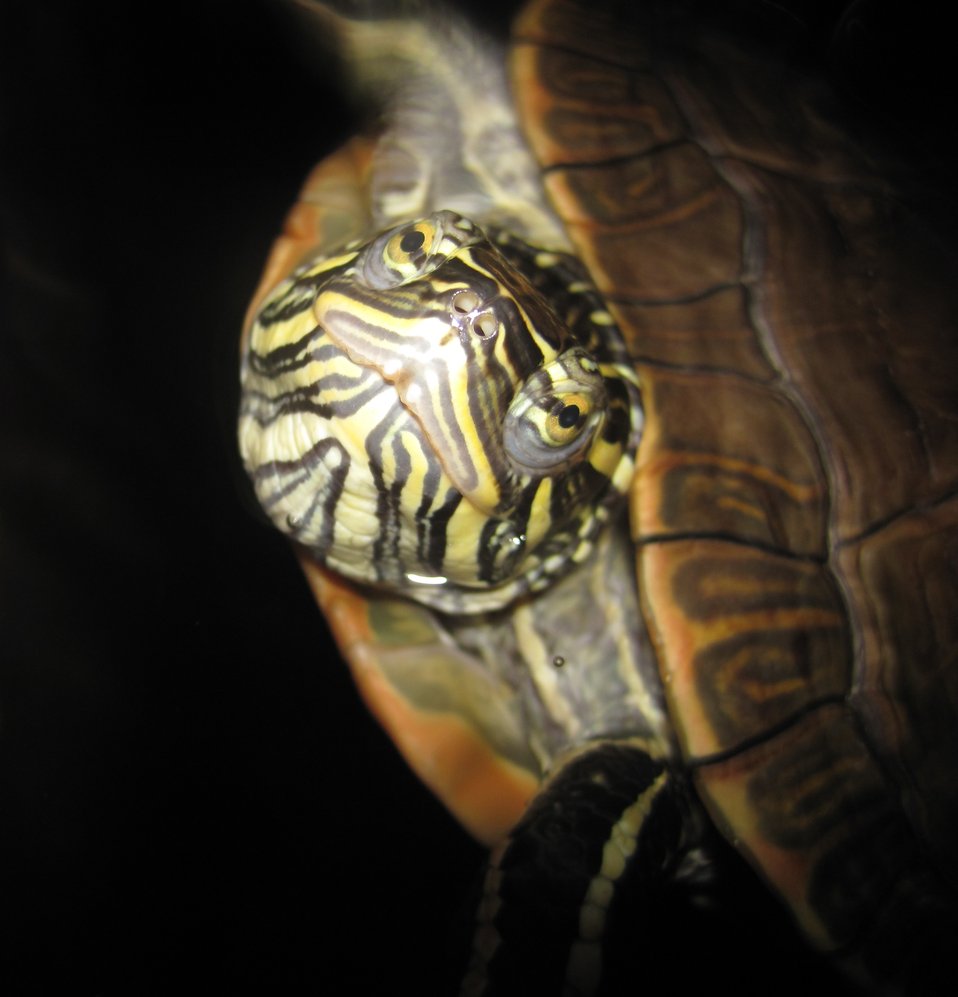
Painted Turtle

Dinner time at the aquarium, and this painted turtle is ready for a meal.

Location: Garrison Dam NFH

Photo Credit: Rob Holm / USFWS

Photo Contest Entry #123